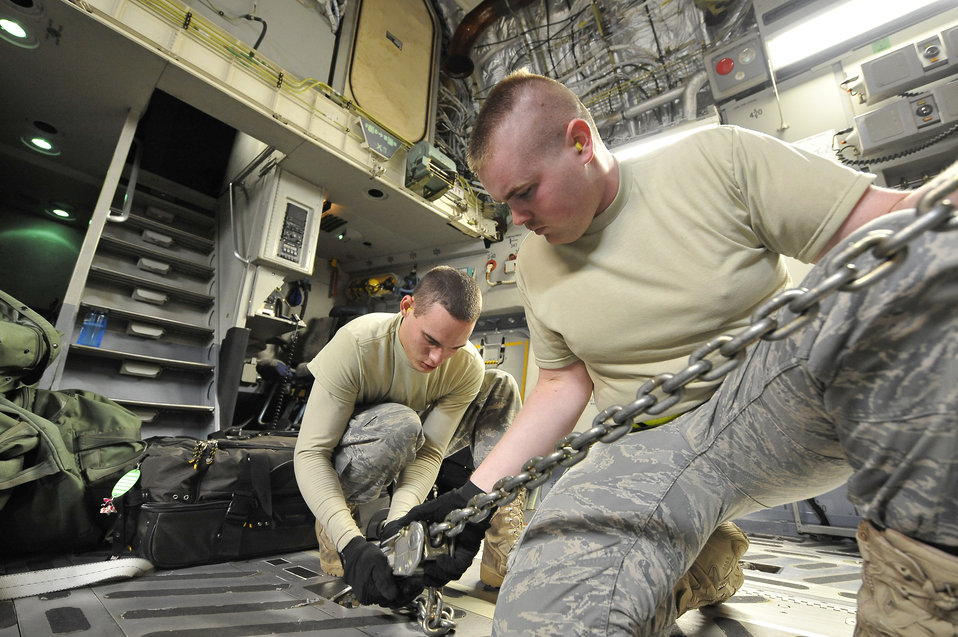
MATV load C-17

Airman 1st Class Daniel Anderson (left) and Staff Sgt. Charles Key use a tie down chain to secure one of two mine-resistant, ambush-protected all-terrain vehicles, or M-ATVs, in a C-17 Globemaster III at Charleston Air Force Base, S.C., Sept. 30, 2009. The two M-ATVs are the first to be delivered to the Afghanistan theater for operational use. Both Airmen are air transportation specialists with the 437th Aerial Port Squadron at Charleston AFB. The C-17 is based out of McChord AFB, Wash.